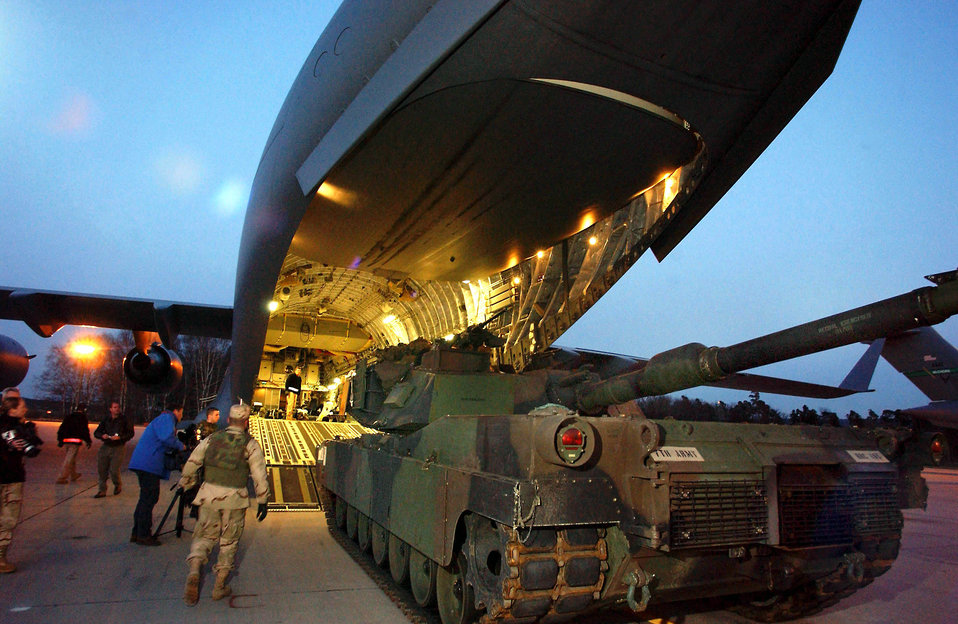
Operation Iraqi Freedom

RAMSTEIN AIR BASE, Germany -- Ground crews load a 66-ton Abrams tank onto a C-17 Globemaster III aircraft here. The aircraft, from the 17th Airlift Squadron at Charleston Air Force Base, S.C., delivered the Army's main battle tank to an Operation Iraqi Freedom air base in northern Iraq.